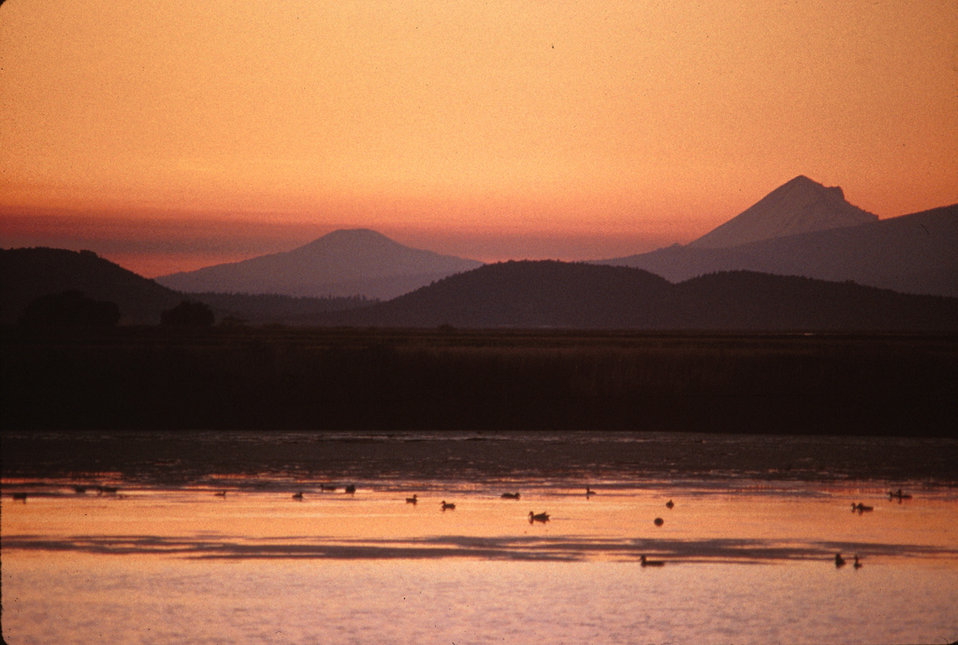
Klamath Mountains sunset

Klamath National Wildlife Refuge Complex, CA-OR border